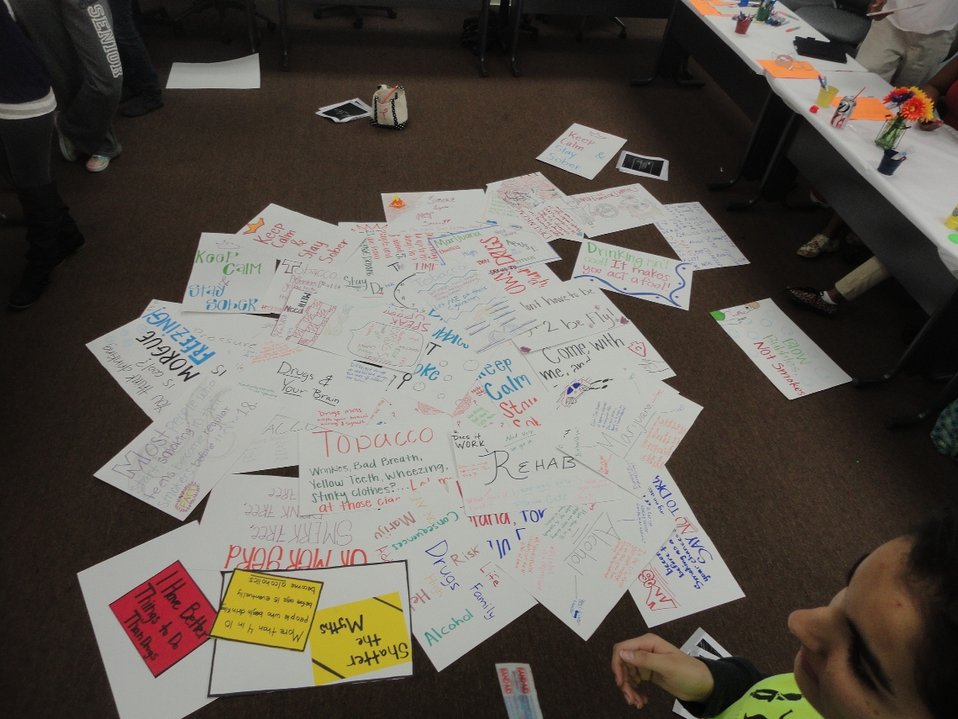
DREAM's, MS Student Advisory Board of Youth Highway Safety NDFW 2013

Mississippi High School Students participate in NDFW 2013 events.